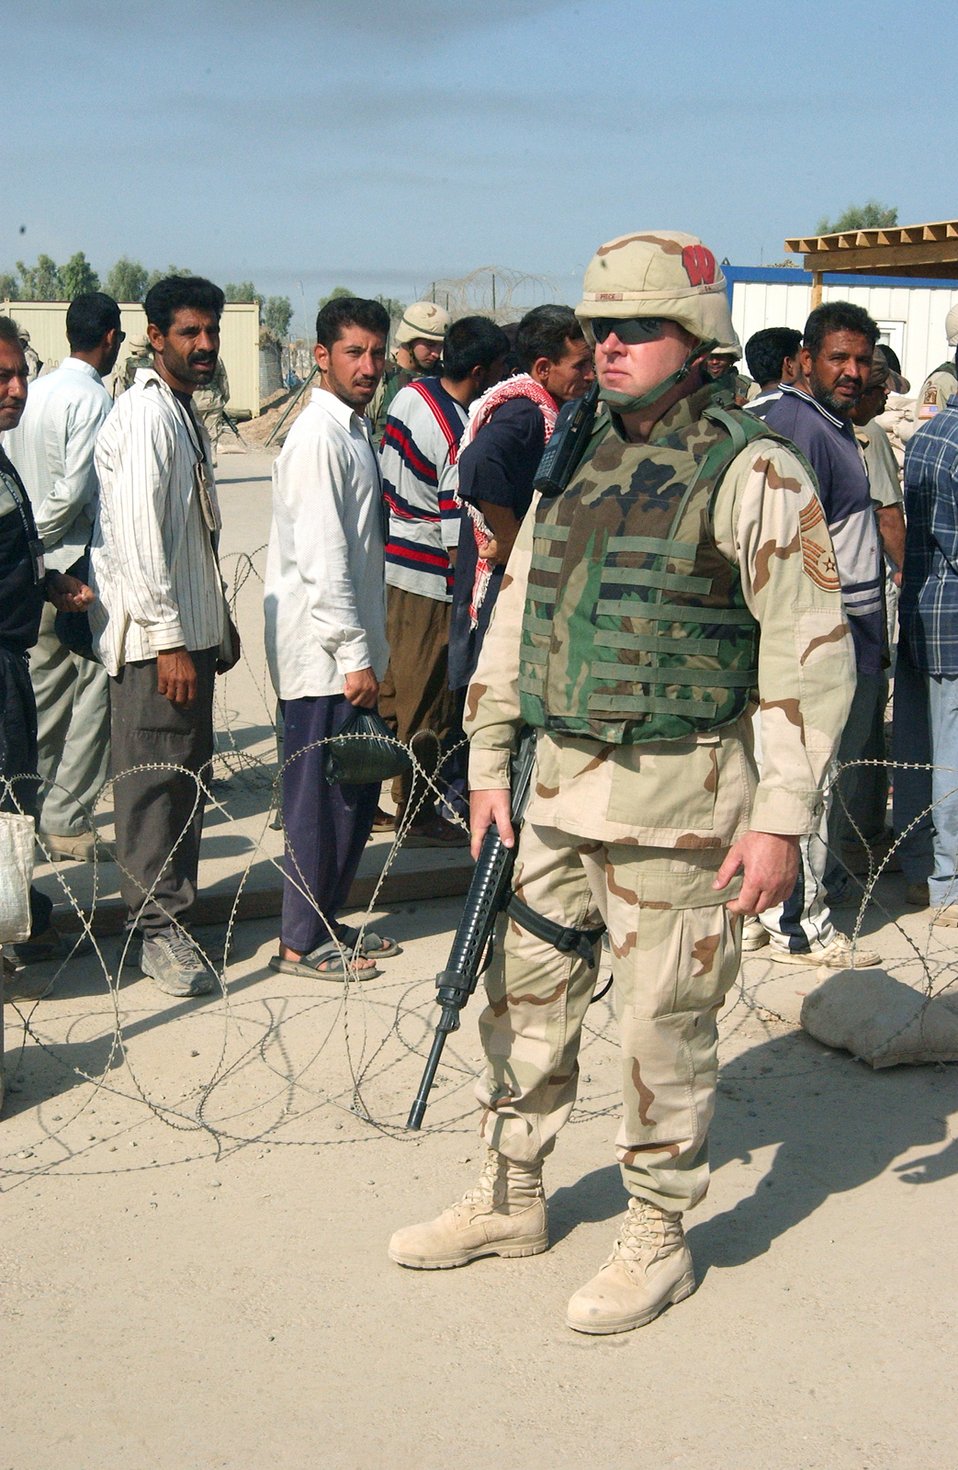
Escorts keep watch over foreign workers

BALAD AIR BASE, Iraq -- Chief Master Sgt. Erik Price watches as workers enter the gate Oct. 4. He is the security escort program manager with the 332nd Expeditionary Civil Engineer Squadron here and is deployed from the Wisconsin Air National Guard.